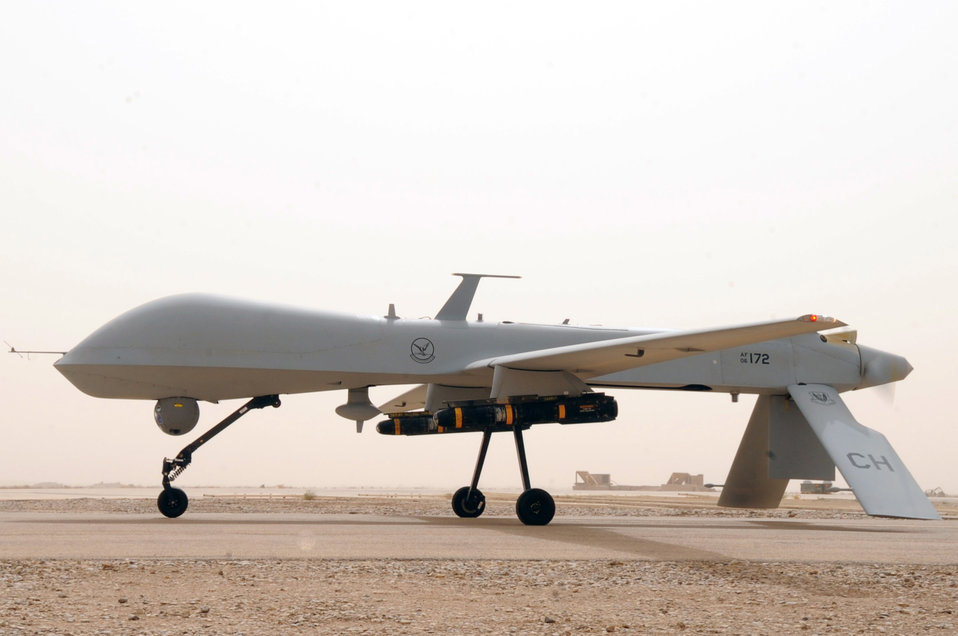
Oct. 5 airpower summary: Predator fires missile

A MQ-1 Predator unmanned aircraft prepares to take off in support of Operation Iraqi Freedom. Through the use of advanced capabilities, the predator provides integrated and synchronized close-air combat operations, to include intelligence, surveillance and reconnaissance.